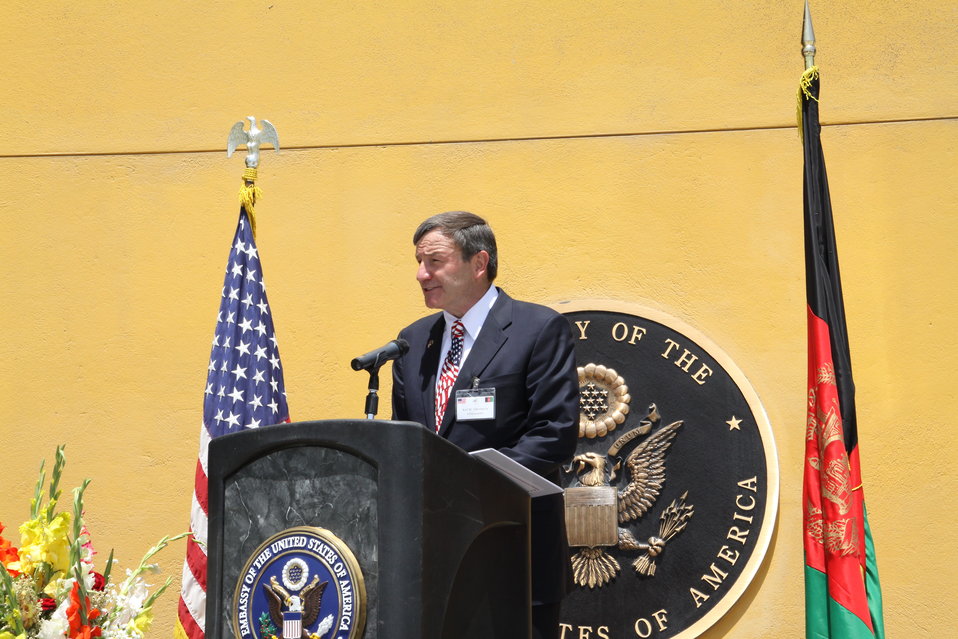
Kabul Official July 4th Celebration